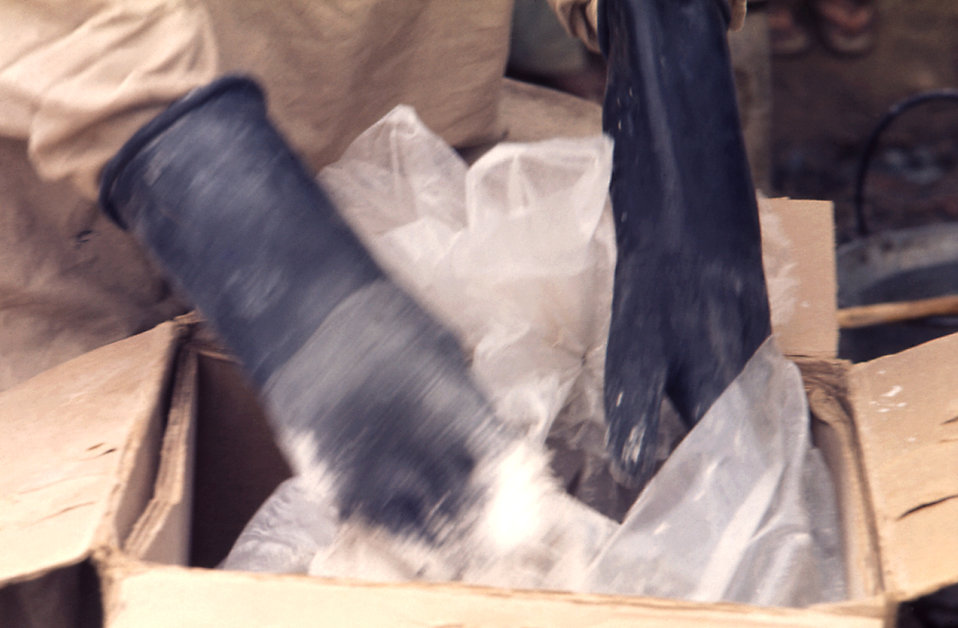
This Pakistani malaria control worker is opening a malathion powder container with properly covered hands and arms.